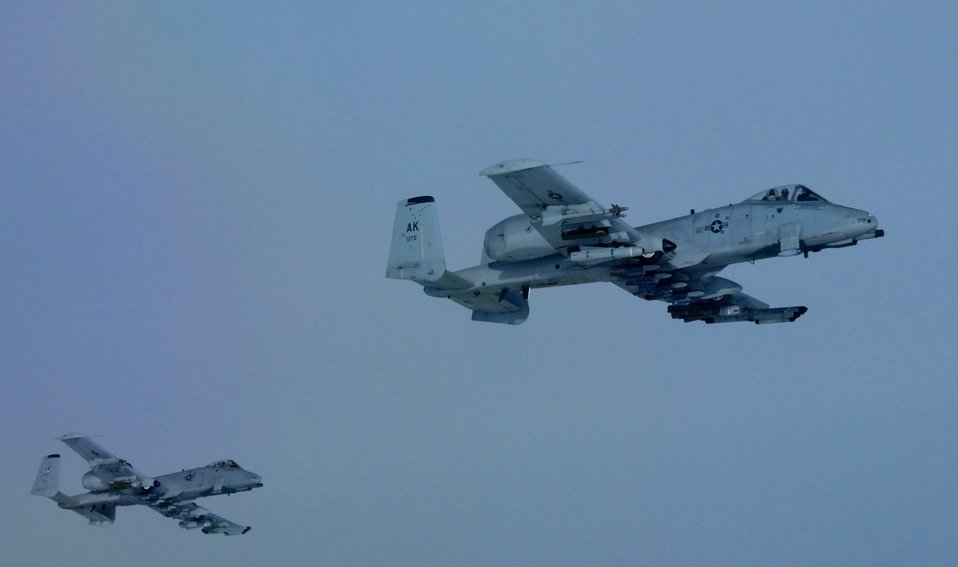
Arctic refueling

Two A-10 Thunderbolt IIs await refueling from a KC-135 Stratotanker April 4 over the Pacific Alaska Range Complex. The 355th Fighter Squadron, Eielson Air Force Base, Alaska, provides mission ready A-10s and has a search and rescue capability for Alaska and deployed sites worldwide.